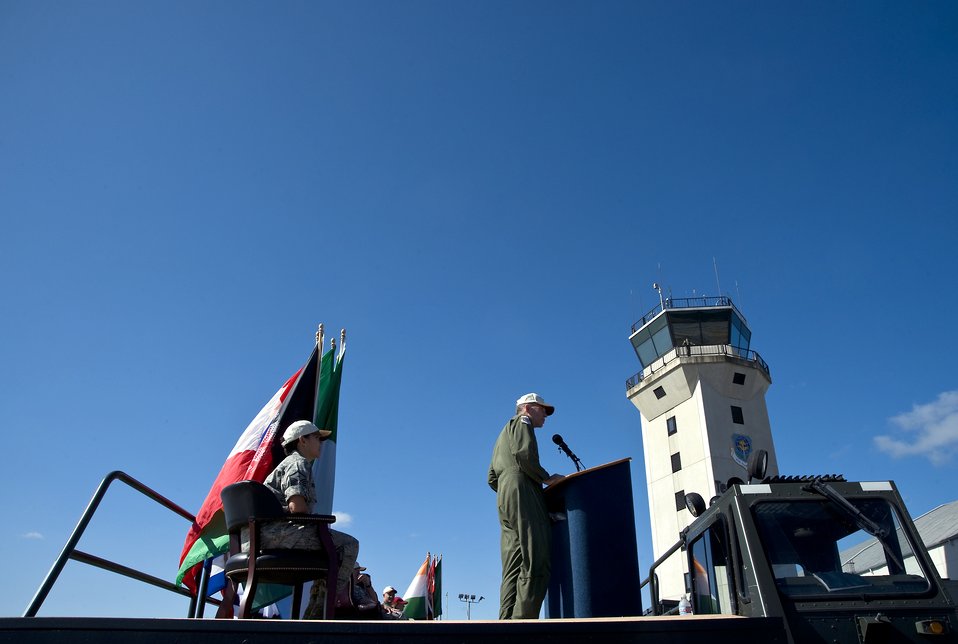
Air Mobility Rodeo begins at McChord

Maj. Gen. Brooks L. Bash speaks to more than 100 teams and 2,500 people from the Air Force and Air Force Reserve, as well as allied nations participating in Air Mobility Rodeo 2009 during opening ceremony July 19 at McChord Air Force Base, Wash. General Bash is the Air Mobility Rodeo 2009 command, and the director of the Air, Space and Information Operations at Air Mobility Command from Scott AFB, Ill.